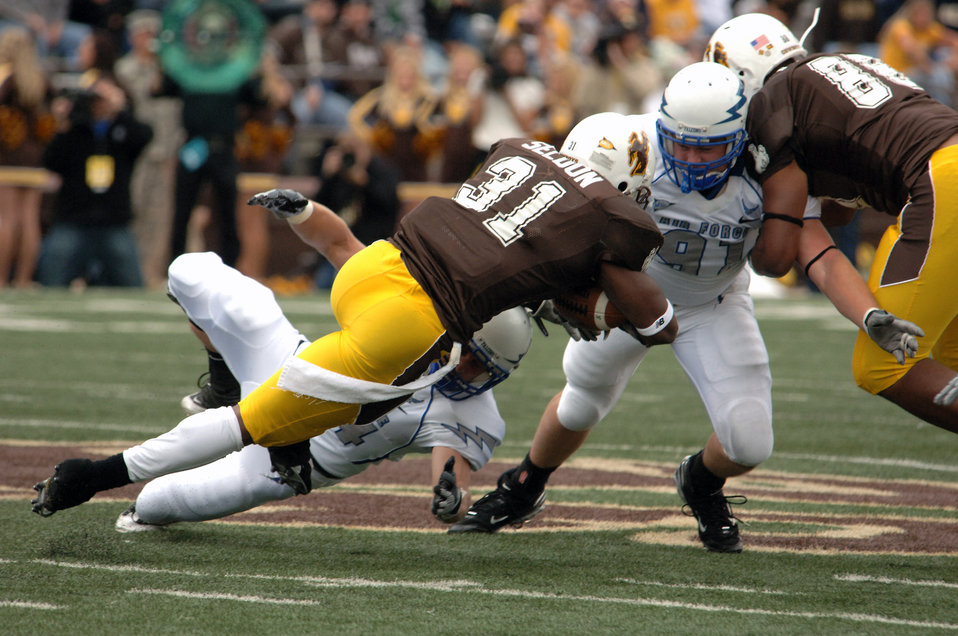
Football: Falcons defense stifles Wyoming, 23-3

U.S. Air Force Academy strong safety Chris Thomas and defensive end Ryan Kemp combine to bring down Wyoming running back Wynel Seldon Sept. 6 in Laramie, Wyo. The Falcons defense held Wyoming to 140 yards rushing and limited Seldon to 67 yards on 10 carries in the Falcons' 23-3 win over Wyoming.